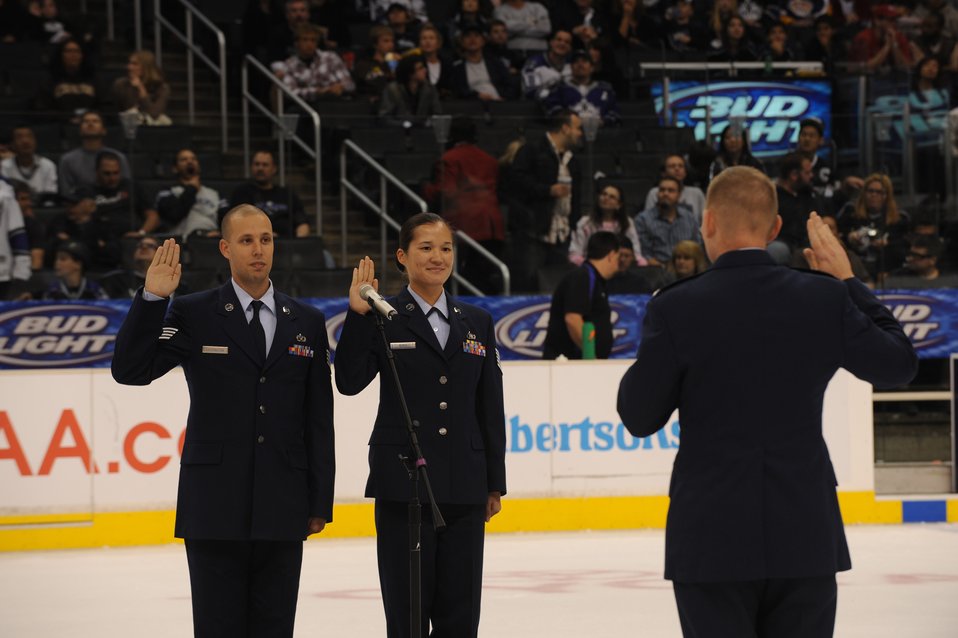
Airmen reenlist during a Los Angeles Kings hockey game

Col. John Odey swears in Tech. Sgt. Surita Rorie and Staff Sgt. Robert Coddington on the ice of the Staples Center, Los Angeles, Calif., Nov. 15. Sergeants Rorie and Coddington reenlisted during a Los Angeles Kings vs. Nashville Predator game as part of Air Force Week Los Angeles. Colonel Odey is the 95th Communications Group Commander, Edwards Air Force Base, Calif. Sergeants Rorie and Coddington are stationed at Edwards Air Force Base, Calif. Air Force Week Los Angeles is an event designed to educate the local population about the Air Force's capabilities and missions through various activities and exhibitions all over the Los Angeles area. It provides an up close and personal look at the men and women of the Air Force serving worldwide in the defense of freedom. Air Force Week Los Angeles runs from Nov. 14 to 21.